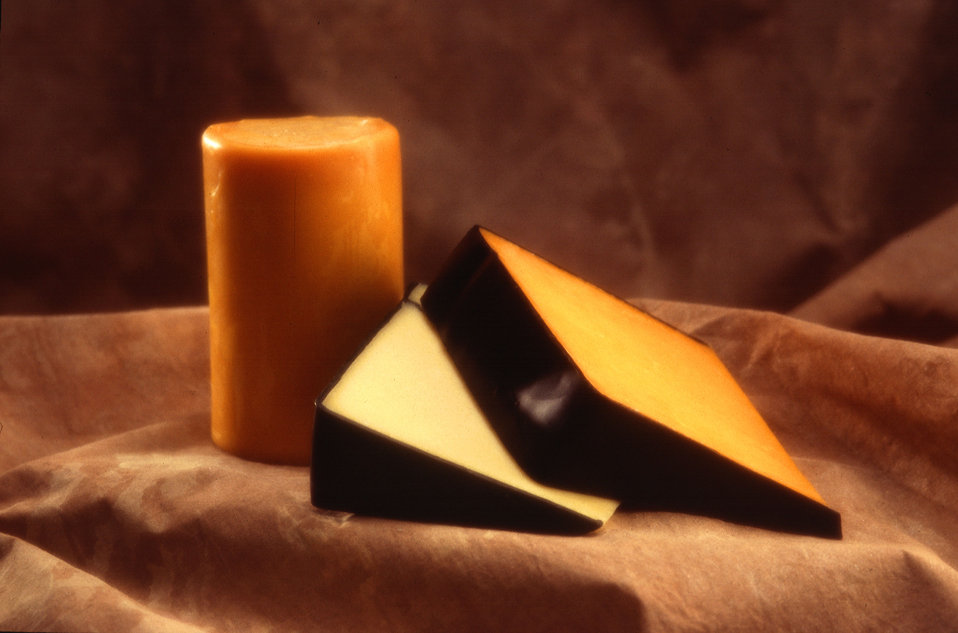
A long-standing mystery about the molecular structure of casein as the main protein group in milk has been solved. This new information is helping cheese producers develop more effective and reliable processing methods. U.S. Department of Agriculture’s (USDA) Agricultural Research Service (ARS) scientists learned that, at the molecular level, casein is truly unique. Casein’s structure is very loose, and contains approximately 10 times the water as any other protein. This discovery may enable cheese makers to automate the initial and often costliest stage of cheese production, the step when enzymes are added to milk. USDA ARS scientists have developed a chemical test that helps cheese makers make sure their cheeses are properly aged and ready to sell. It's a procedure that commercial dairies can automate to check such products as Cheddar, feta, and Monterey Jack.